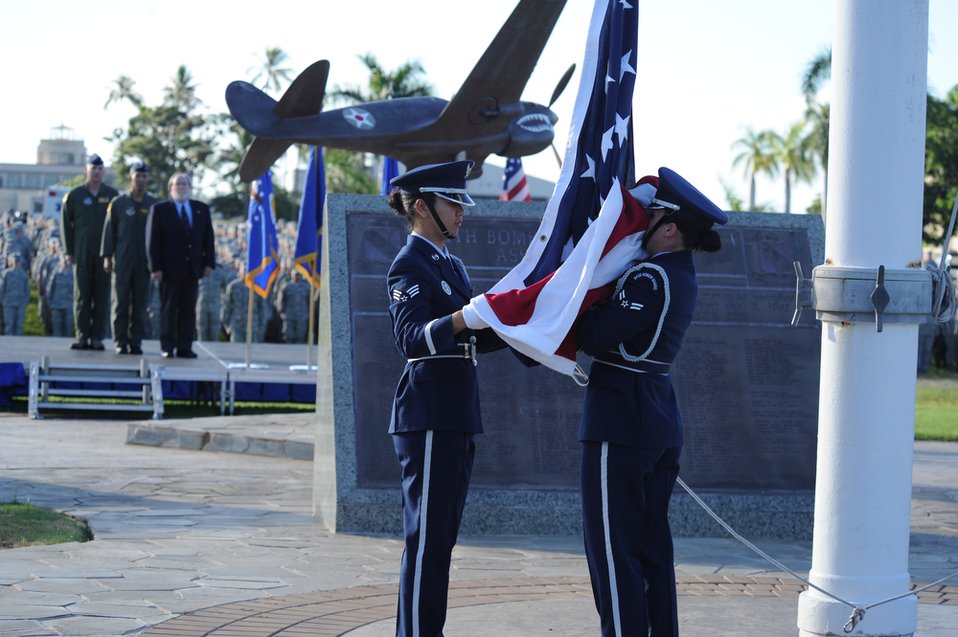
9/11 ceremony at Joint Base Pearl Harbor-Hickam, Hawaii

Col. Sam Barrett, Hawaii National Guard Deputy Adjutant General Brig. Gen. Joseph Kim and Gov. Neil Abercrombie watch as two honor guard members raise the flag during a 9/11 tribute ceremony Sept. 9, 2011, at Joint Base Pearl Harbor-Hickam, Hawaii. Barrett is the 15th Wing commander.